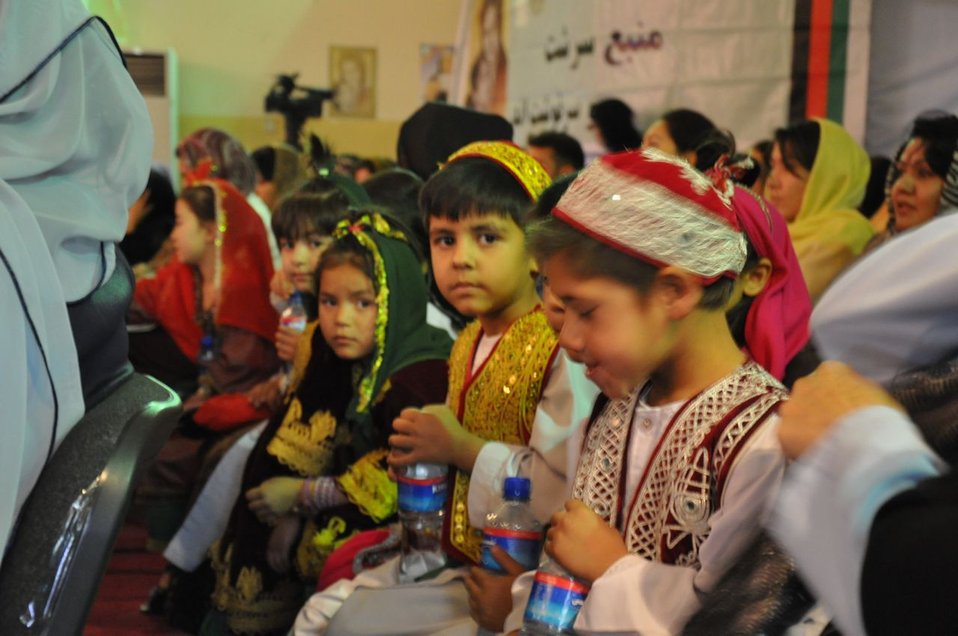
Mother's Day in Afghanistan

The kids were great during the long speeches...